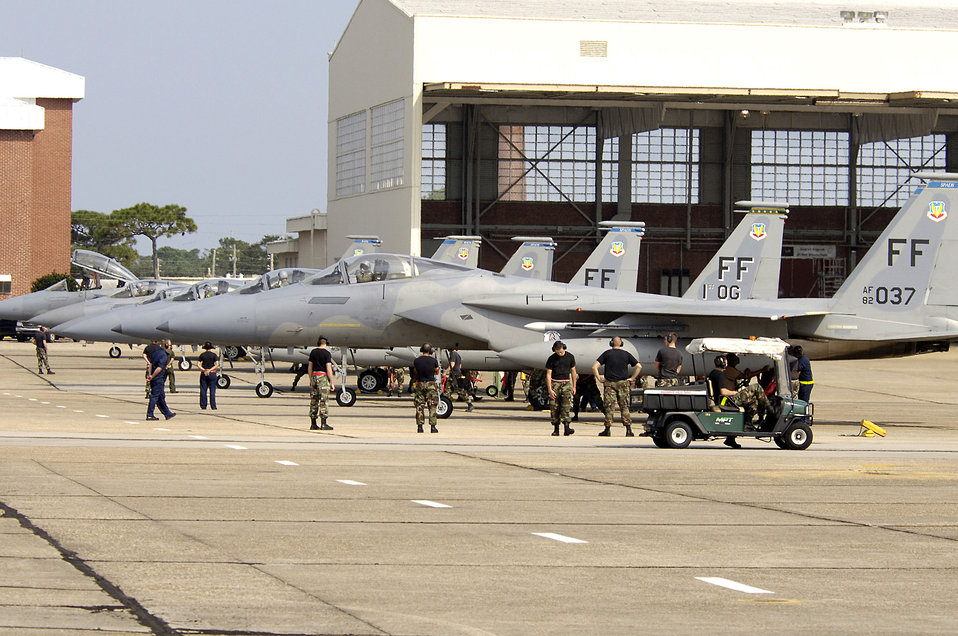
Eglin provides shelter for Hurricane Ophelia evacuees

EGLIN AIR FORCE BASE, Fla. -- F-15 Eagles from Langley Air Force Base, Va., arrive here Sept. 13 during an evacuation from Hurricane Ophelia.